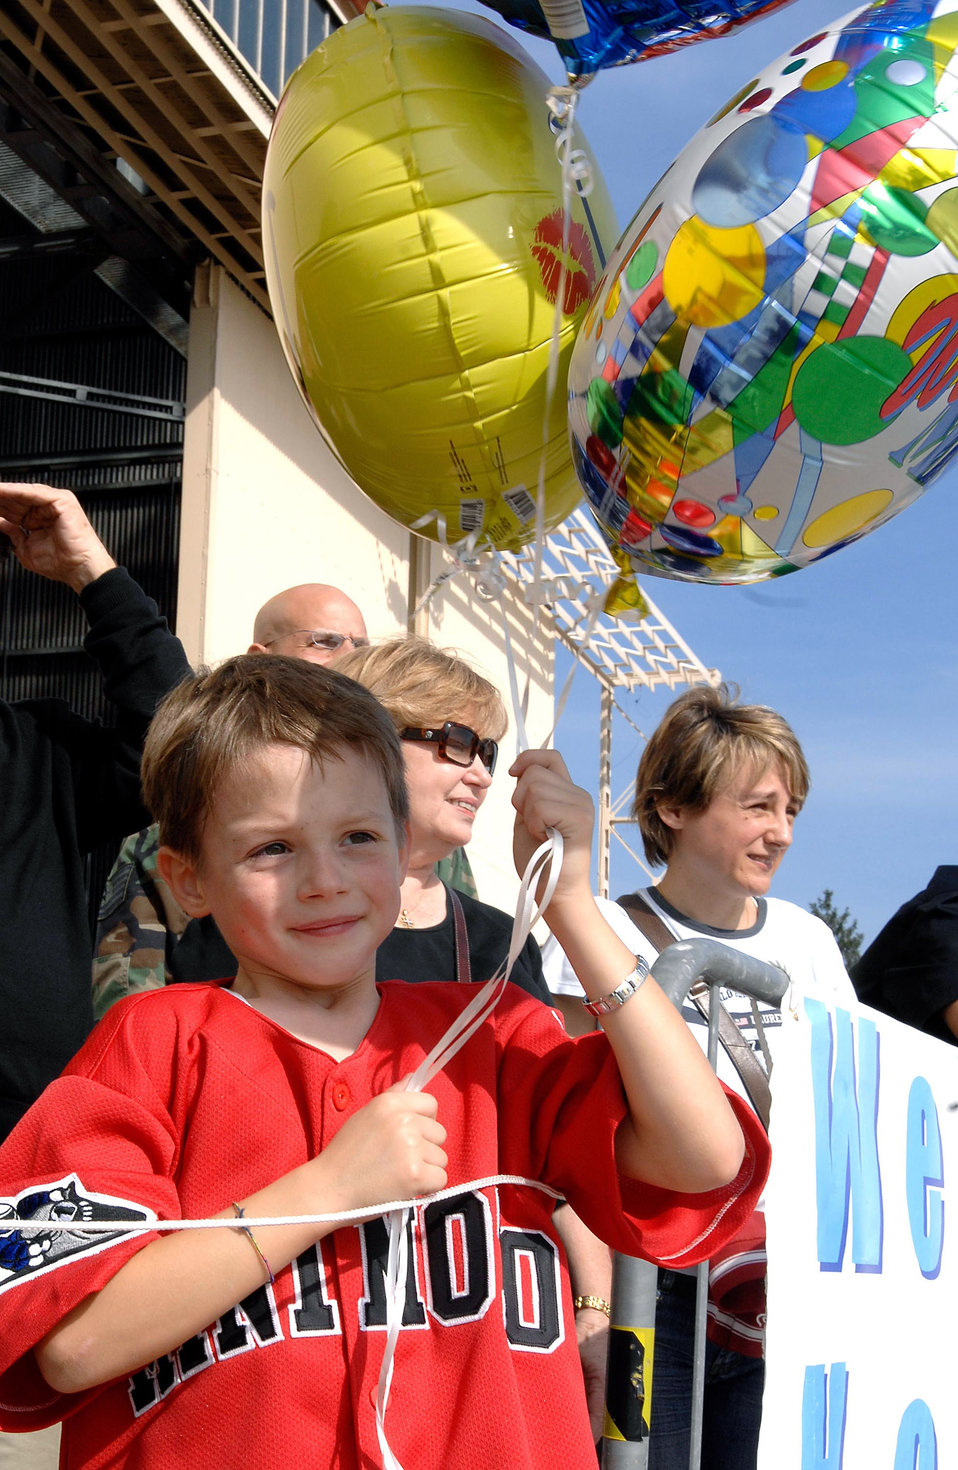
Returning warriors welcomed home

Patrick Clark anxiously awaits the return of his dad, Tech. Sgt. Raymond Clark, at Aviano Air Base, Italy, Oct. 9. The squadron's mission in South Korea marked the first time a Europe-based unit deployed to the Pacific as part of an air and space expeditionary force deployment. Sergeant Clark is assigned to the 31st Maintenance Squadron.